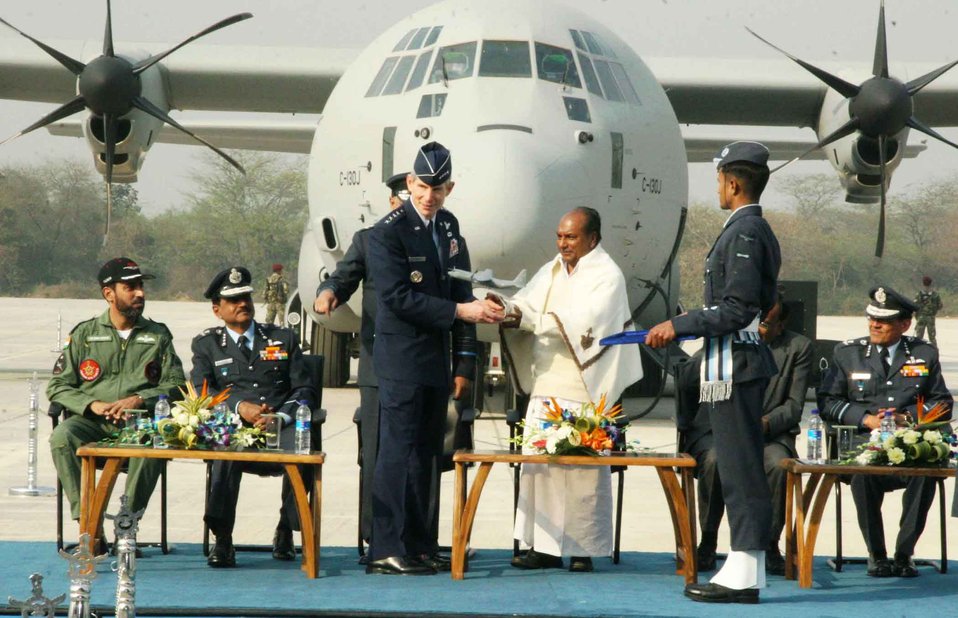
CSAF helps Indian Air Force welcome C-130J

Air Force Chief of Staff Gen. Norton Schwartz presents a model of the C-130J Super Hercules to Indian Defense Minister A.K. Antony (center) at a ceremony Feb. 5, 2011, at Hindon Air Force Station near New Delhi, India. The Indian Air Force inducted the first of six C-130Js aircraft into its mobility fleet.